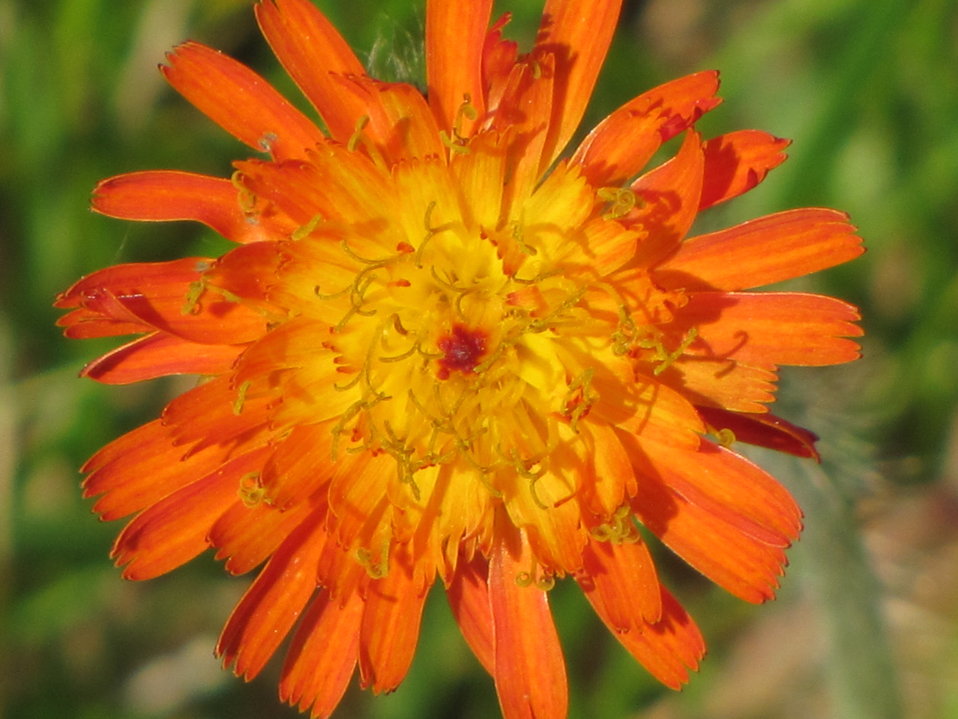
Orange Hawkeye

Orange Hawkweed (Hieracium aurantiacum), or Devil's Paintbrush, is often misidentified as Indian Paintbrush. Europeans in the past believed hawks ate the plant to sharpen their eyesight. These flowers can be found throughout the summer in open spaces and typically grow 8-24 in.